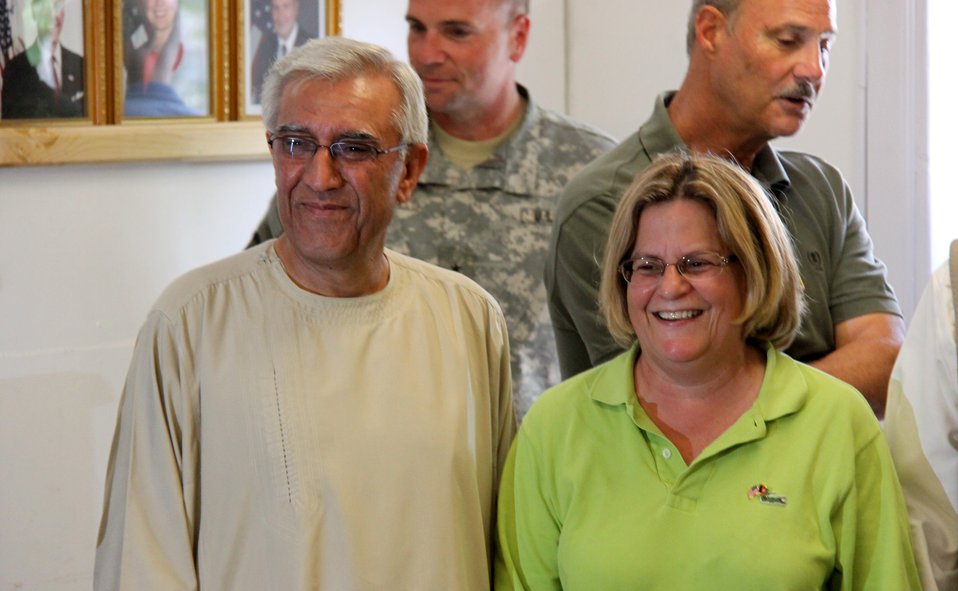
Meeting with Local Leaders in Kandahar